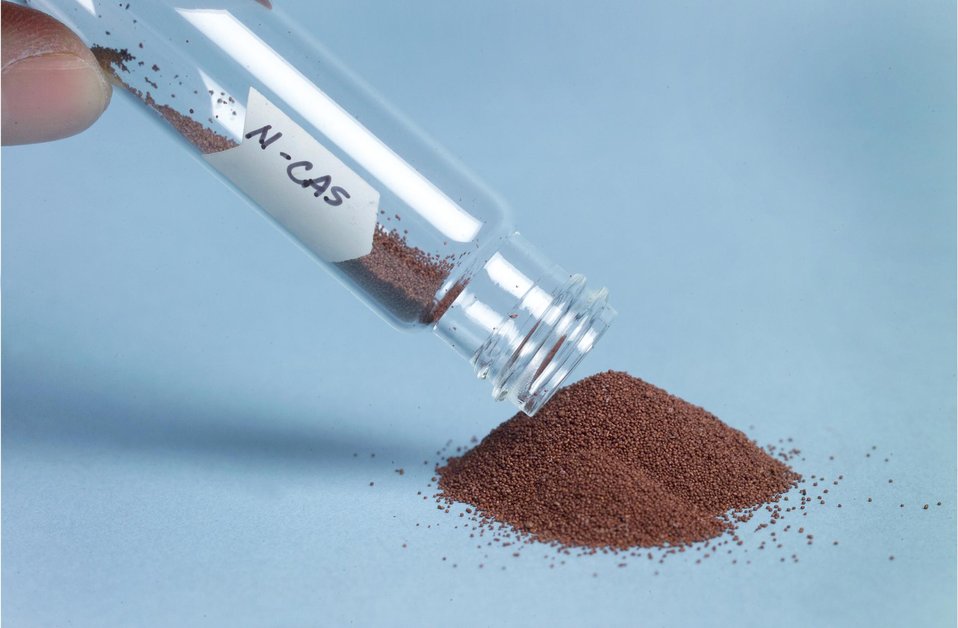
INL researchers developed a long-lasting, high-capacity nanocomposite polymer particle engineered to remove arsenic concentrations from water rendering it safe to drink and compliant with the U.S. and world standards.

INL nanotechnology researchers have engineered a revolutionary and affordable material called nano-composite arsenic sorbent (N-CAS), that is up to seven times more effective than the best material currently available. N-CAS contains high concentration of arsenic absorbing nano-particle metal oxides embedded in a strong composite polymer matrix. It is estimated that one gall of N-CAS can treat 350-400,000 gallons of water compared to 50,000 for the next best material today. It is also more affordable costing about ten cents per thousand gallons of water treated. In addition, it is high efficiency in removing arsenic rapidly, using high-flow systems and even in water with relatively low arsenic concentrations.